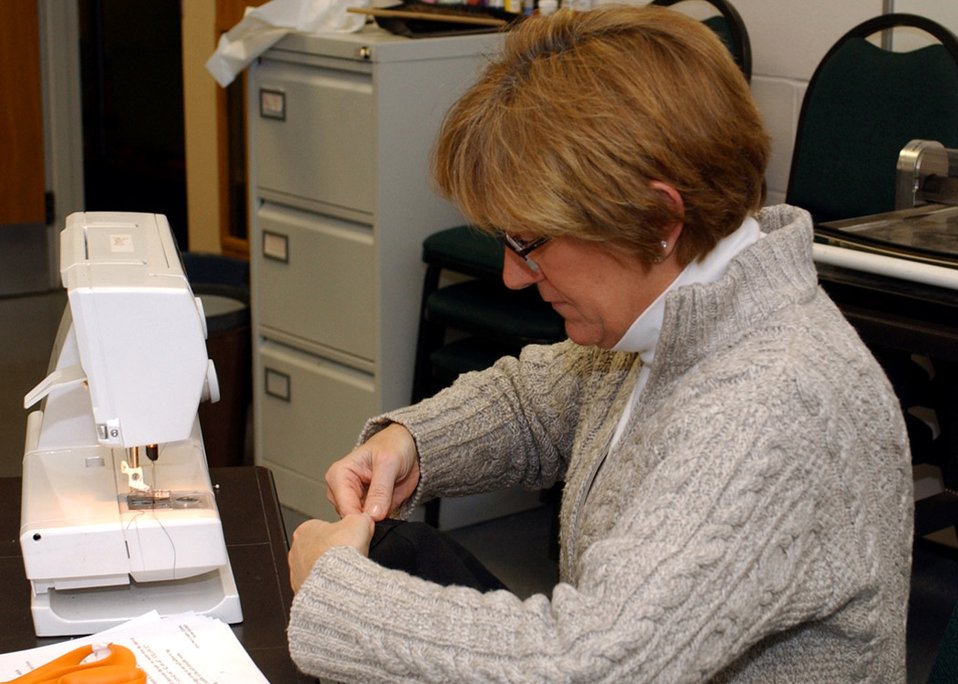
Sew Much Comfort

Laurie Miller, Sew Much Comfort local coordinator, stitches a T-shirt for a wounded servicemember Dec. 18 at the Arts & Crafts Center. The Sew Much Comfort group meets twice a month to sew clothing for injured servicemembers at Landstuhl Regional Medical Center in Germany.